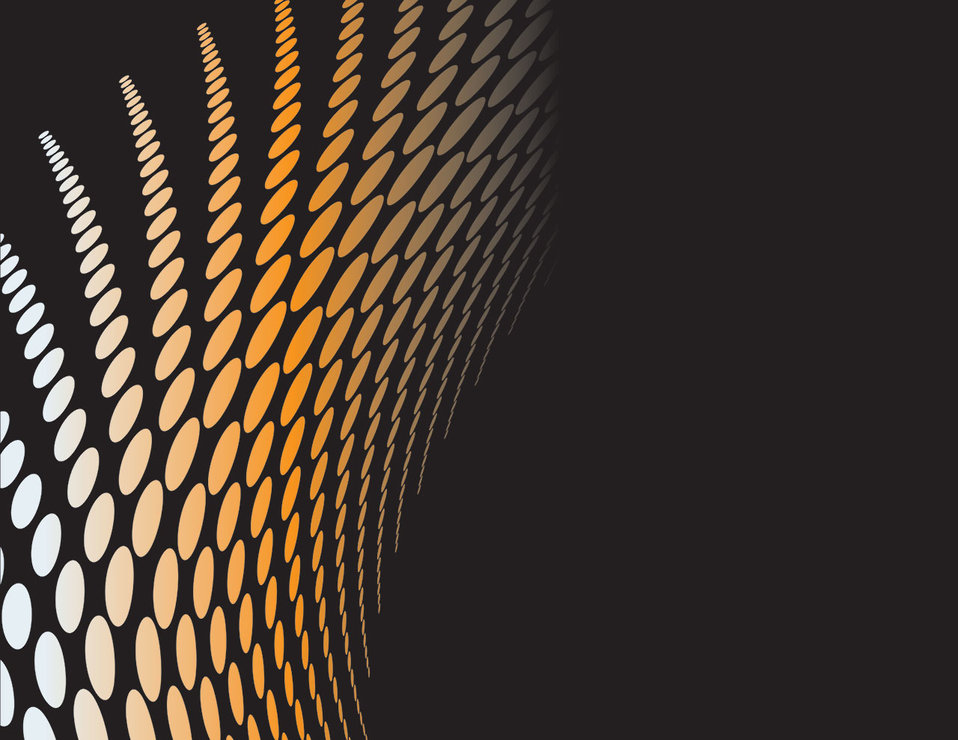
Abstract black background. available in vector format on vectorportal.com.